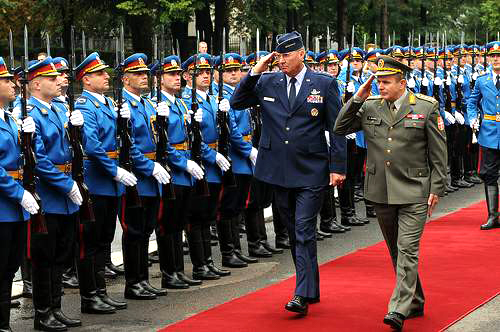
Stavridis: National Guard State Partnership Program resources well-spent

Gen. Craig McKinley and Serbian Army Lt. Gen. Miloje Miletic review Serbian troops Sept. 10, 2010, in Belgrade, Serbia, for National Guard State Partnership Program activities. General McKinley is the chief of the National Guard Bureau, and General Miletic is the chief of staff of the Serbian Armed Forces.